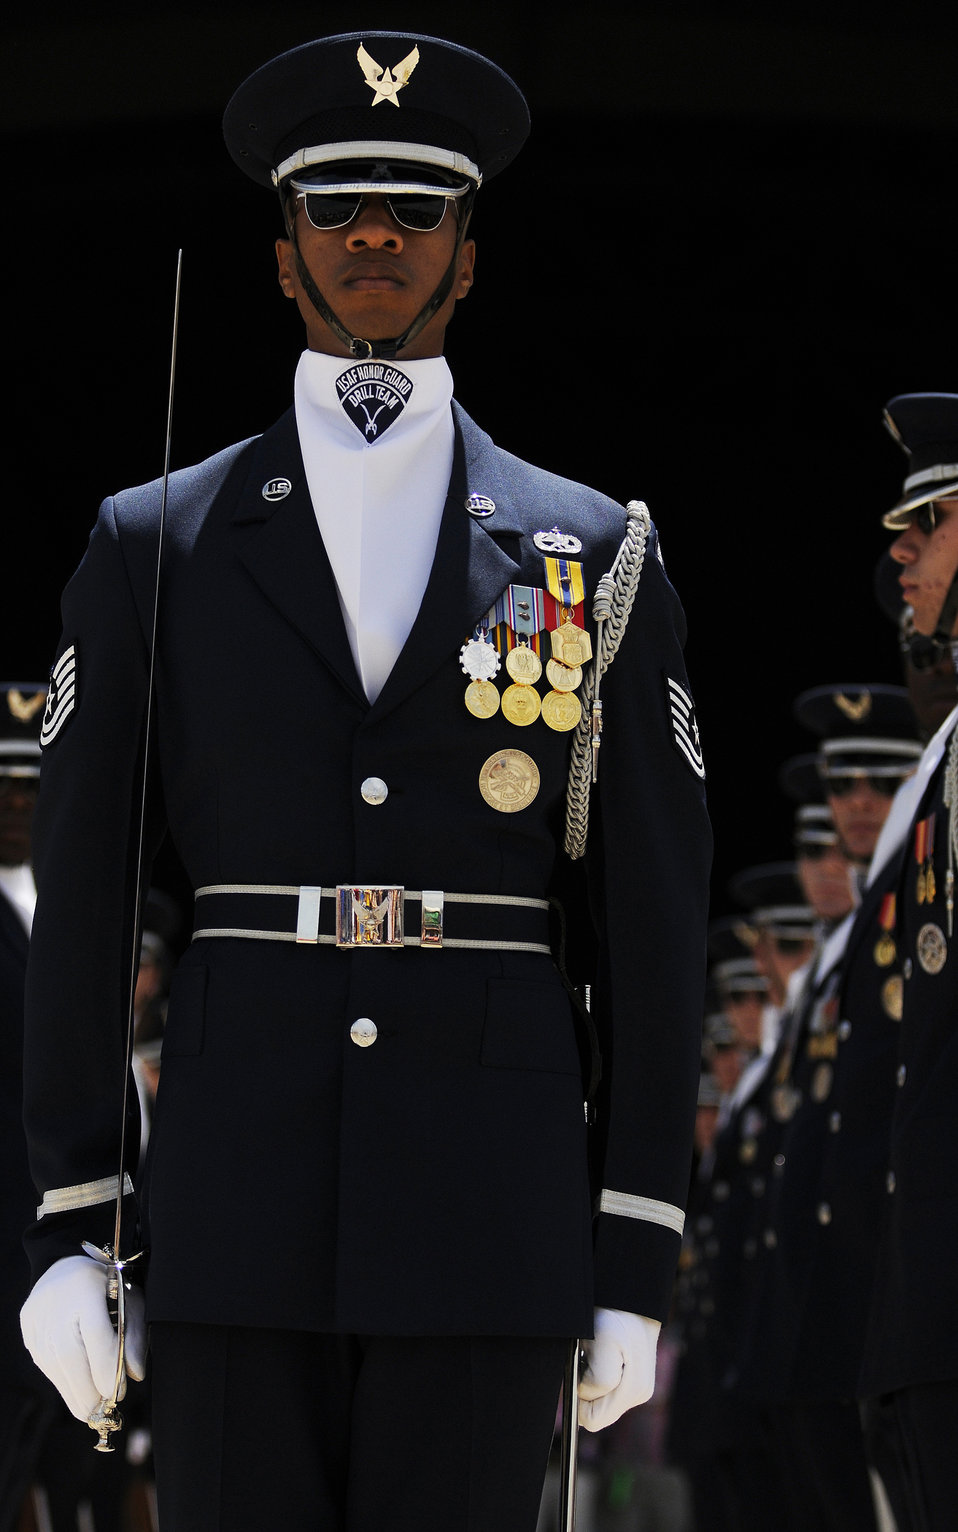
Precise movement

United States Air Force Honor Guard Drill Team member Tech. Sgt. Robert Jones performs May 15, 2010, at the 2010 Joint Service Open House at Joint Base Andrews, Md. The open house attracted thousands and featured many attractions to educate the public about the military's varied missions.